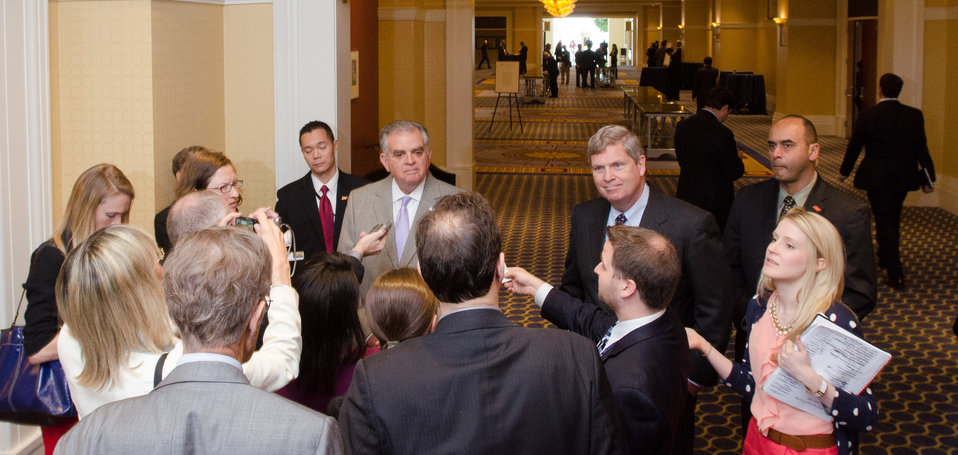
Agriculture Secretary Tom Vilsack (right) and U.S. Department of Transportation (DOT) Secretary Ray LaHood meet with reporters after the announcement today that the U.S. Department of Agriculture (USDA) is extending for five years its agreement to work with the Federal Aviation Administration (FAA) and other partners to help develop a viable biofuel for the aviation industry. The Secretary signed the agreement with U.S. Department of Transportation (DOT) Secretary Ray LaHood at the Advanced Biofuels Leadership Conference at Gaylord National Harbor in Maryland on Monday, April 15, 2013.